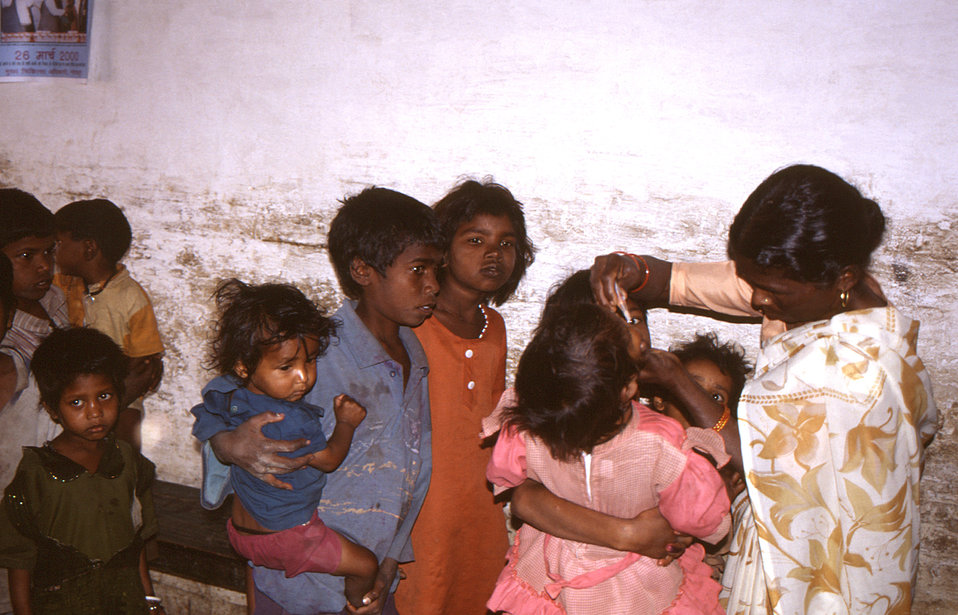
The National Immunization Days (NID) were effective at immunizing thousands of children throughout India. Here we see that older siblings were often responsible for bringing their younger brothers and sisters with them, so that they too could receive the polio vaccine. This image showed a small child, being held by another child, as she received her polio vaccine from a public health care practitioner. After having received her vaccine, the child would also have her finger marked by an ink marker, and in this way, documented as having actually received the immunization, as well as also preventing the child from receiving additional doses during the immunization campaign. The image was provided by Chris Zahniser, B.S.N., R.N., M.P.H., a STOP Transmission of Polio (STOP) immunization initiative team member and photographer. Ms. Zahniser was at the time assigned to the state of Uttar Pradesh in northern India, and spent three months working in the Districts of Gorakhpur and Deoria.